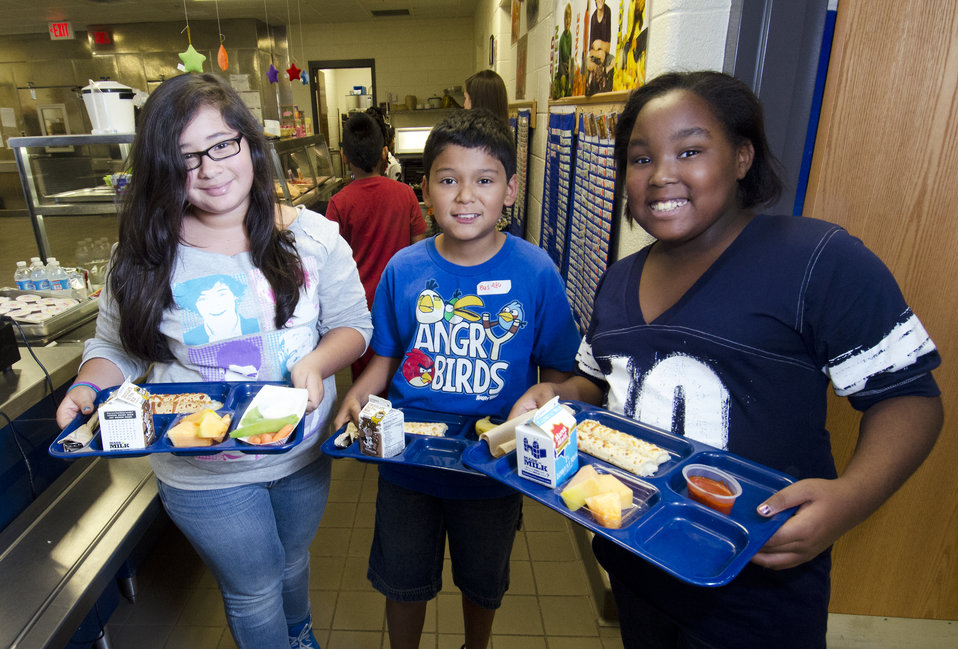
School lunch staff and students enjoy the new school lunch menu created to meet the new standards at the Yorkshire Elementary School in Manassas, VA on Friday, Sept. 7, 2012.